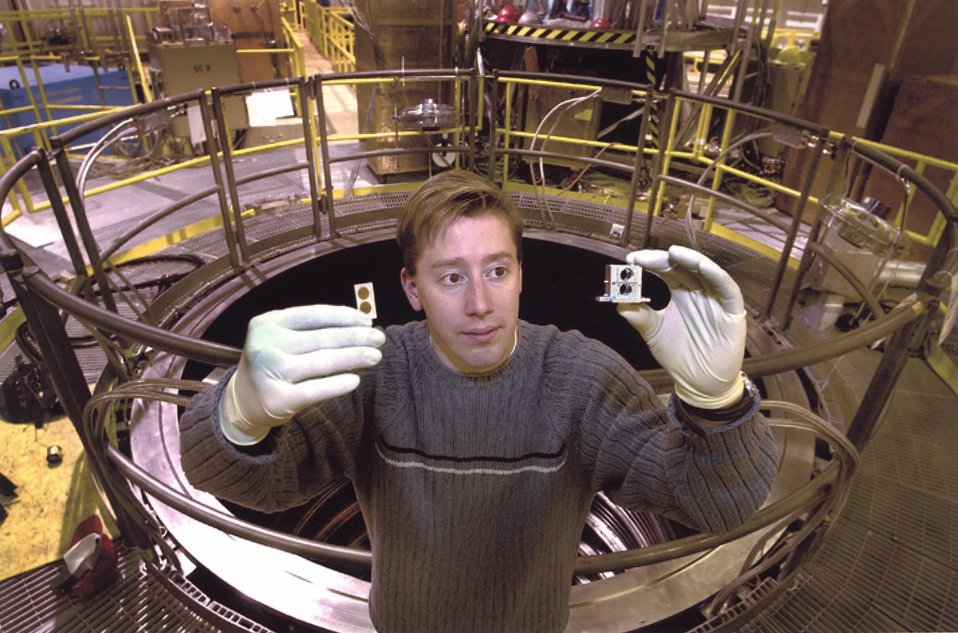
FOR THIS Z ACCELERATOR EXPERIMENT SANDIA TECHNICIAN HOLDS TWO FLYER PLATES IN HIS RIGHT HAND AND CHAMBERS OF A HIGH TECH GUN IN HIS LEFT.

A MAGNETIC FIELD THAT ACCELERATES PELLETS FASTER THAN ANYTHING EXCEPT A NUCLEAR EXPLOSION WAS DEVELOPED AT SANDIA. THE MACHINE THAT GENERATES THE FIELD, SANDIA'S Z ACCELERATOR, CURRENTLY PROPELS DIME-SIZED PELLETS CALLED FLYER PLATES ONLY A FEW HUNDRED MILLIMETERS TO GAIN INFORMATION ON THE EFFECT OF HIGH-VELOCITY IMPACTS. THE DATA GAINED FROM THIS EXPERIMENT WILL BENEFIT WORK ON ORBITING SATELLITES AND SCIENCE BASED STOCKPILE STEWARDSHIP.